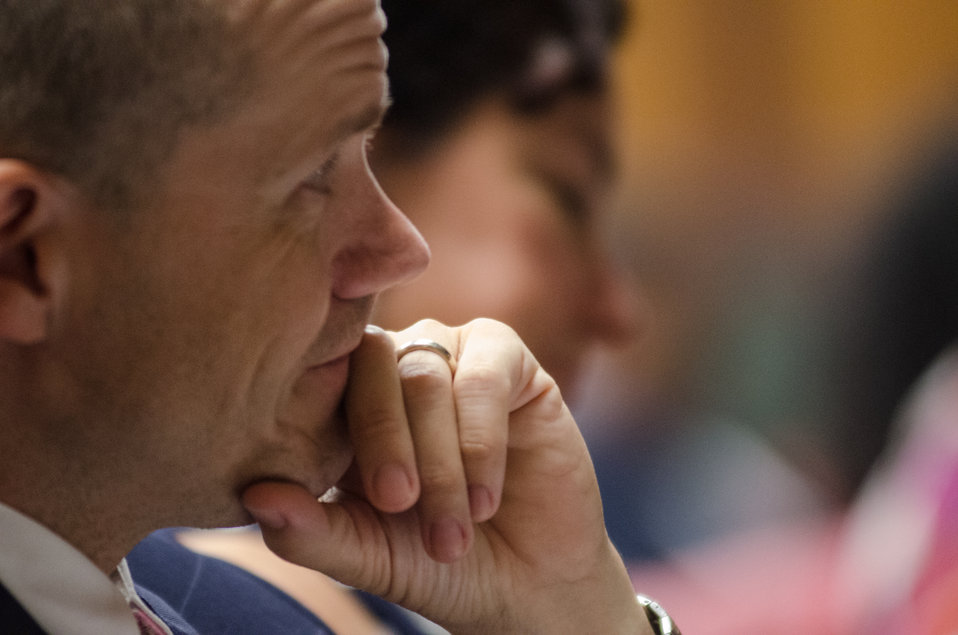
A U.S. Department of Agriculture (USDA) employee listens to USDA Rural Development’s (RD) Acting Under Secretary Doug O'Brien at USDA’s RD 2nd Annual Cultural Transformation kickoff opening ceremony and forums, themed “Employees Influencing Change,” on Tuesday, Aug. 13, 2013 USDA in Washington, D.C.